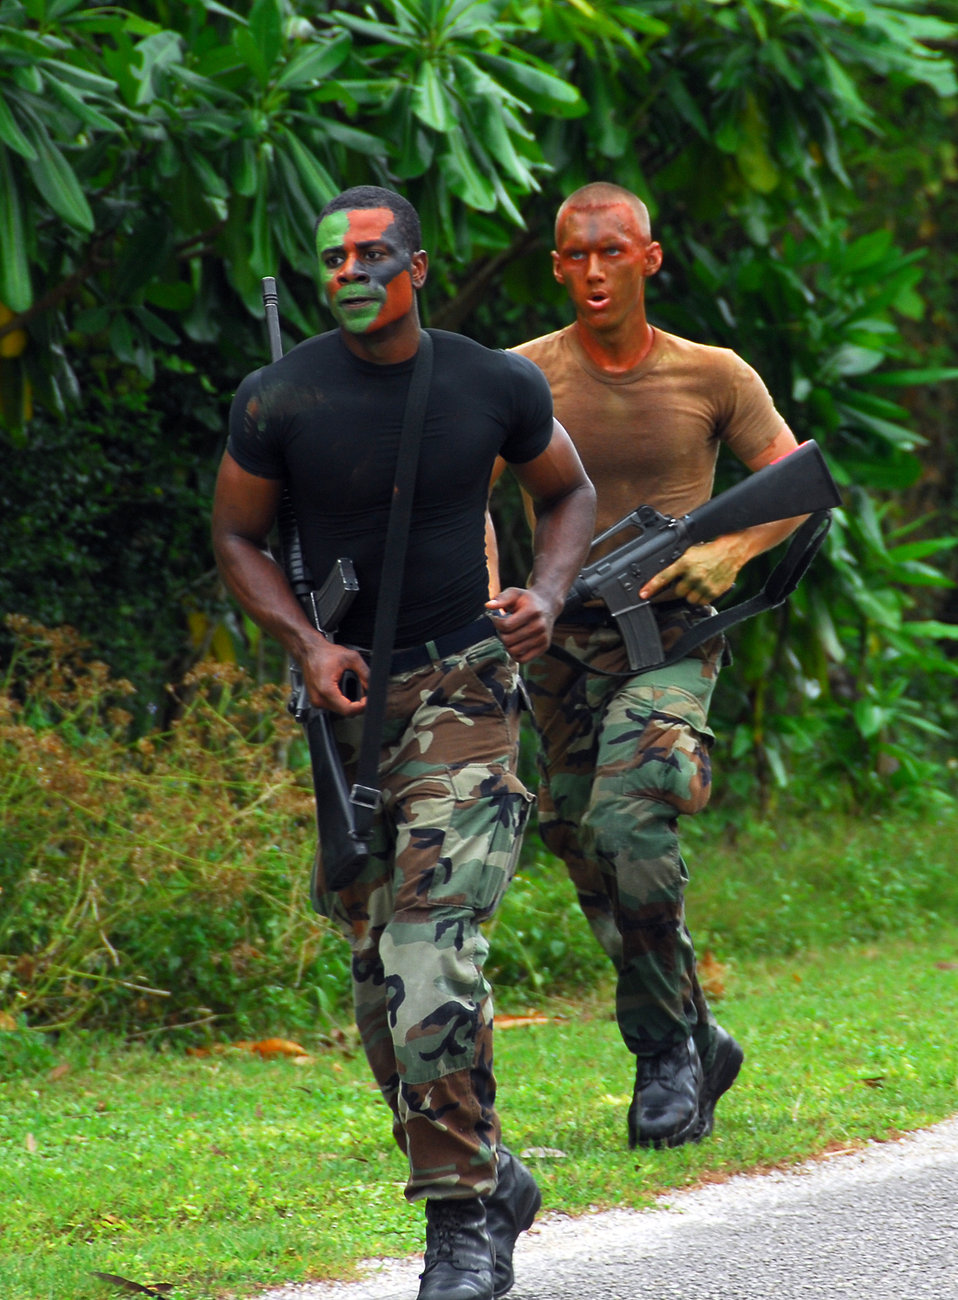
Competition challenges Airmen's warfighting abilities

Staff Sgt. Christopher Berry (front) and Airman 1st Class Bryan Nagy, both from the 36th Communications Squadron, run 2.3 miles to Checkpoint 6 during the Warrior Day competition Jan. 25 at Andersen Air Force Base, Guam. The competition simulates challenges Airmen may face in combat.